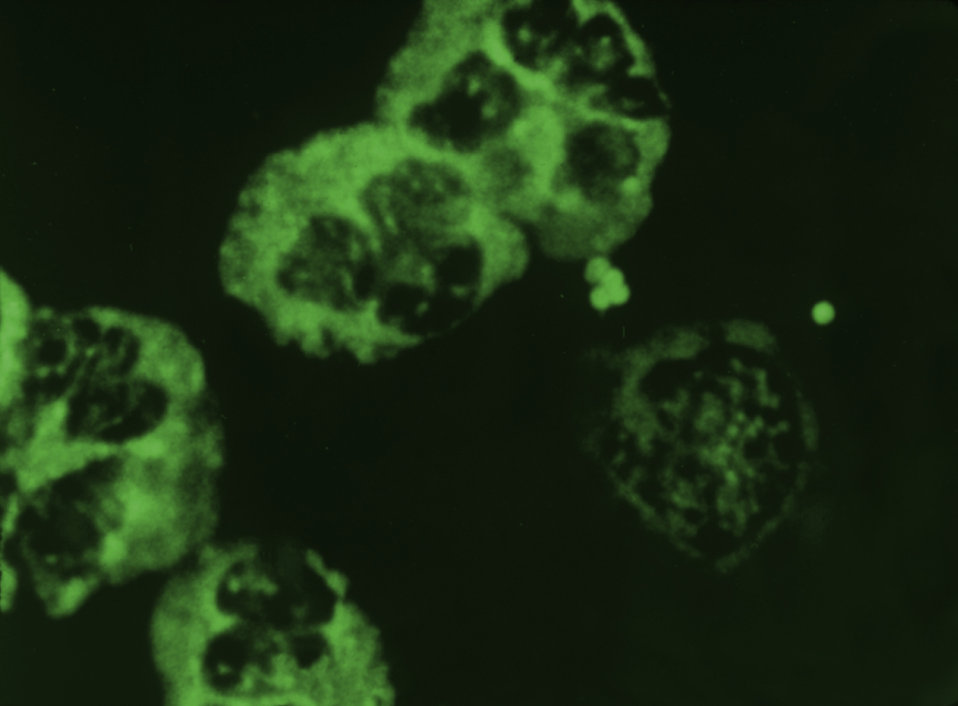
Enhanced by using a fluorescent antibody staining technique, this photomicrograph revealed the presence of Gram-negative Neisseria gonorrhoeae bacteria, accompanied by a number of polymorphonuclear leukocytes (PMN), or white blood cells (WBC) known as neutrophils. The congregation of these PMNs is in response to the gonococcal infection, and in large quantities is known as pus.